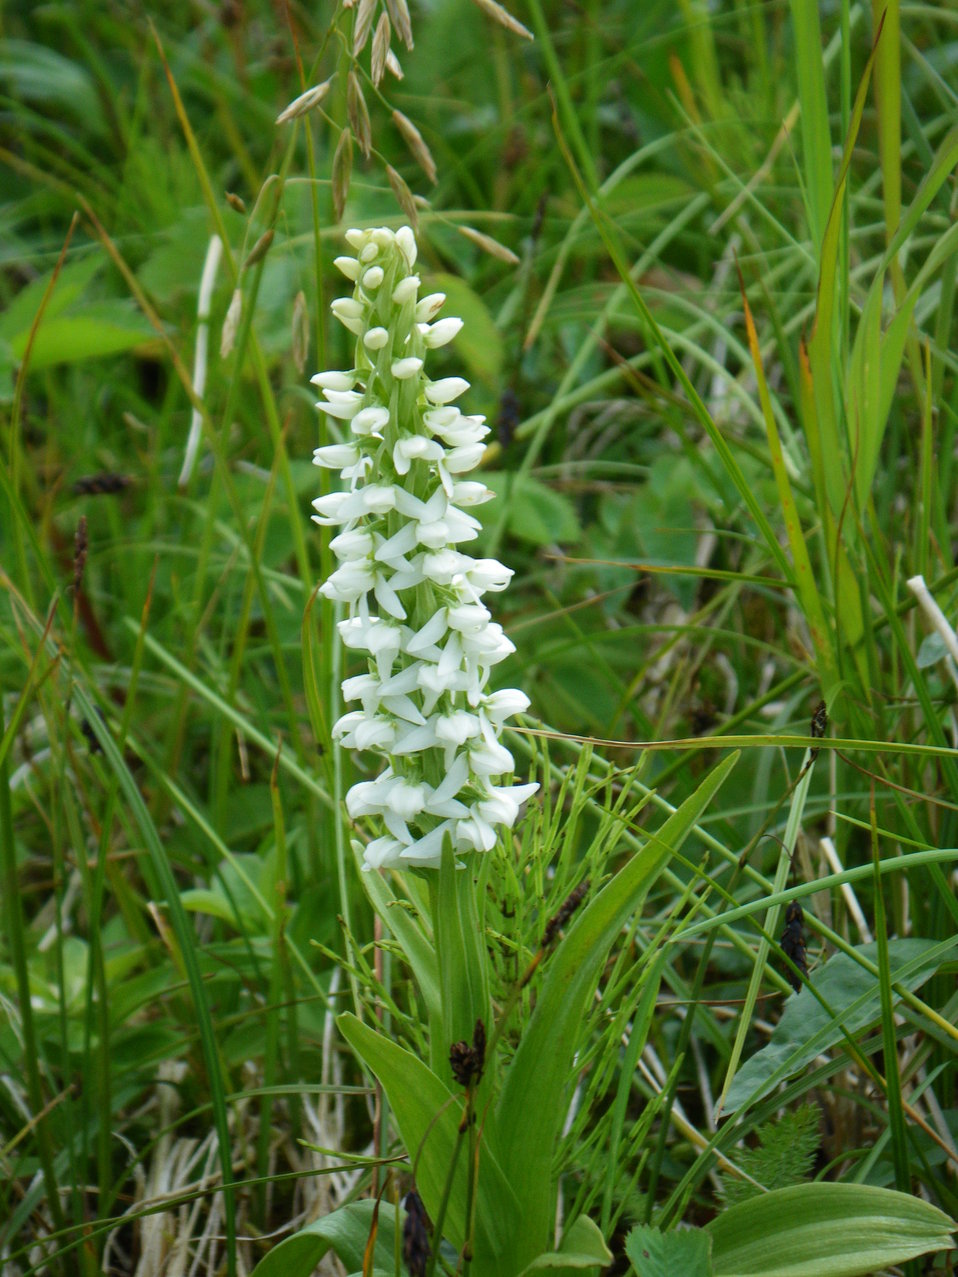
Platanthera

Izembek National Wildlife Refuge